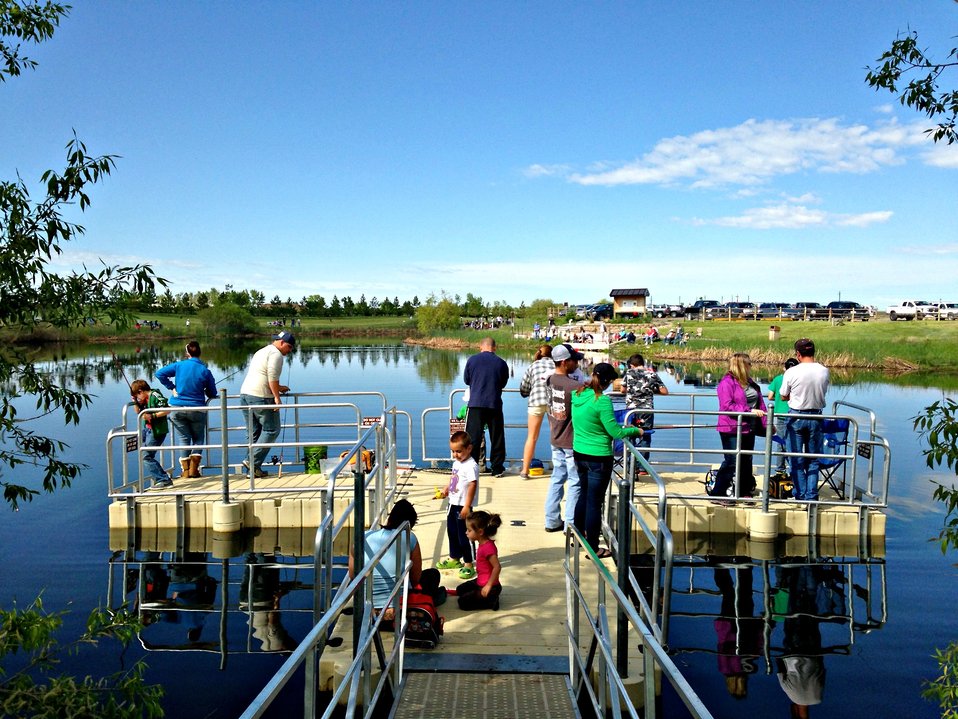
Gone fishin!

Its been said, 'Give a man a fish and you feed him for a day. Teach a man to fish and you feed him for a lifetime.'

However, when you take a child fishing, see their excitement, and get to spend quality time with your son, daughter, niece, nephew, or neighbor, it simply nourishes the soul.

The first week in June is national fishing and boating week. As part of events across the nation, the Montana Fish and Wildlife Conservation Office helped host a kid's fishing event at Malmstrom Air Force Base, Montana.